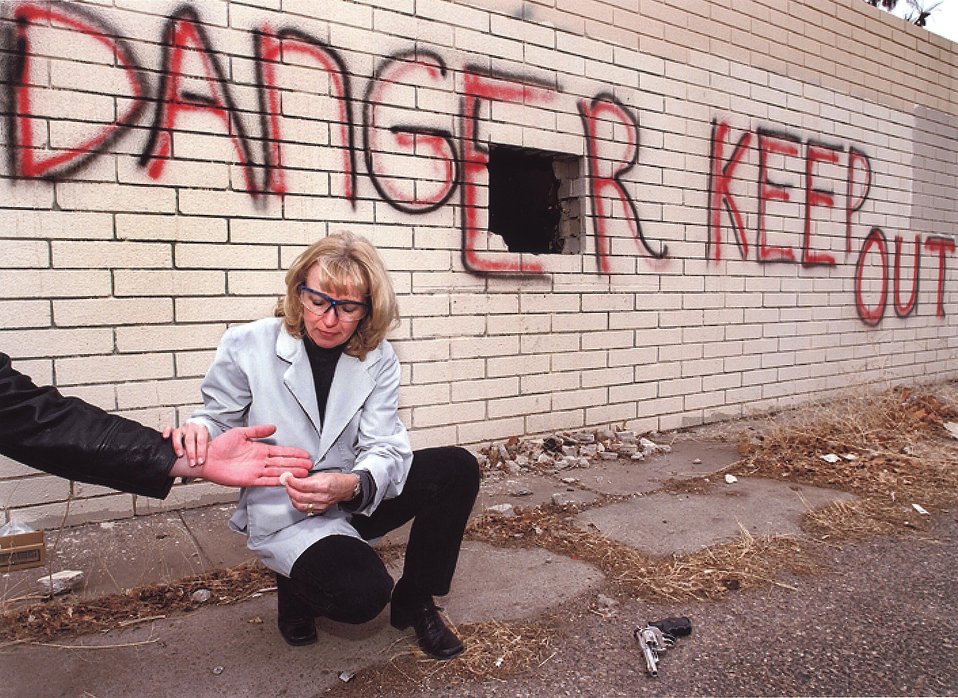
SANDIA EXPLOSIVE EXPERT DEMONSTRATES USING THE FIBERGLASS SWAB IN THE INSTANT SHOOTER ID KIT.

WHEN A GUN IS FIRED, THE SHOOTER GETS SPRAYED WITH AN INVISIBLE BLAST OF CHEMICAL RESIDUES. SANDIA WORKING WITH A COLORADO COMPANY, DEVELOPED A GUNSHOT RESIDUE DETECTION TECHNIQUE THAT IDENTIFIES VERY SMALL AMOUNTS CHEMICAL CLUES ON A PERSON'S HANDS, ARMS OR CLOTHING. THIS WILL HELP POLICE OFFICERS AT A CRIME SCENE QUICKLY IDENTIFY A SUSPECT WHO HAS RECENTLY FIRED A GUN.